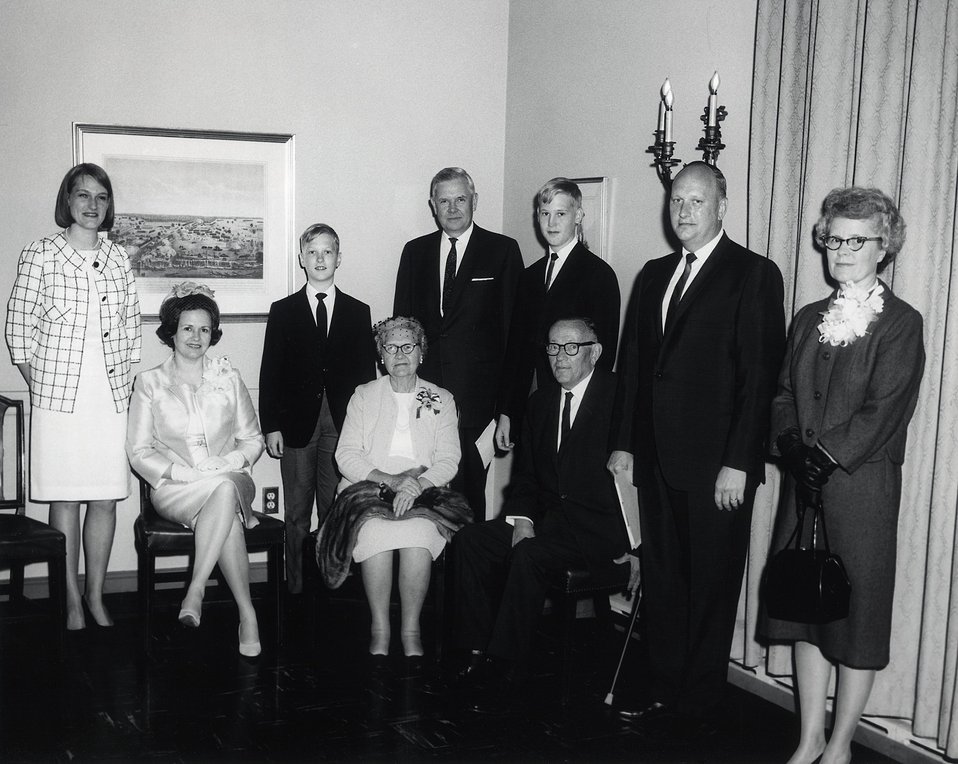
7th E.O. Lawrence Award Ceremony, April 27, 1966, Wash., D.C. L-R: Miss Marylin K. Vanstrum, Mrs. Paul R. Vanstrum, Paul W. Vanstrum, Commissioner Tape, Richard W. Vanstrum, Mr. Paul R. Vanstrum, Mrs. Tape. Seated: Mr. and Mrs. Paul A. Vanstrum (Parents of the Medalist).